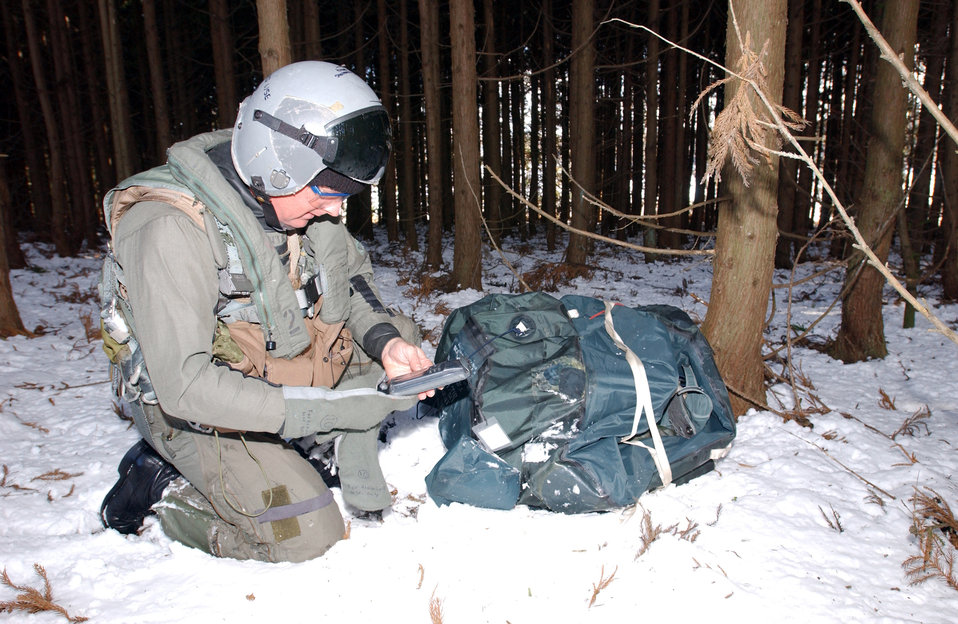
Surviving on the island

MISAWA AIR BASE, Japan -- Brig. Gen. Dana T. Atkins collects his gear during survival training at Camp Defender here last week. Pilots go through the training to build upon and reinforce what they were taught during Combat Survival Training at Fairchild Air Force Base, Wash. Survival trainees must provide for their own food and water, evade capture and communicate as they would if they had to eject from their aircraft into hostile territory. The training is mandatory for pilots every two years. General Atkins is the 35th Fighter Wing and Misawa Air Base installation commander.